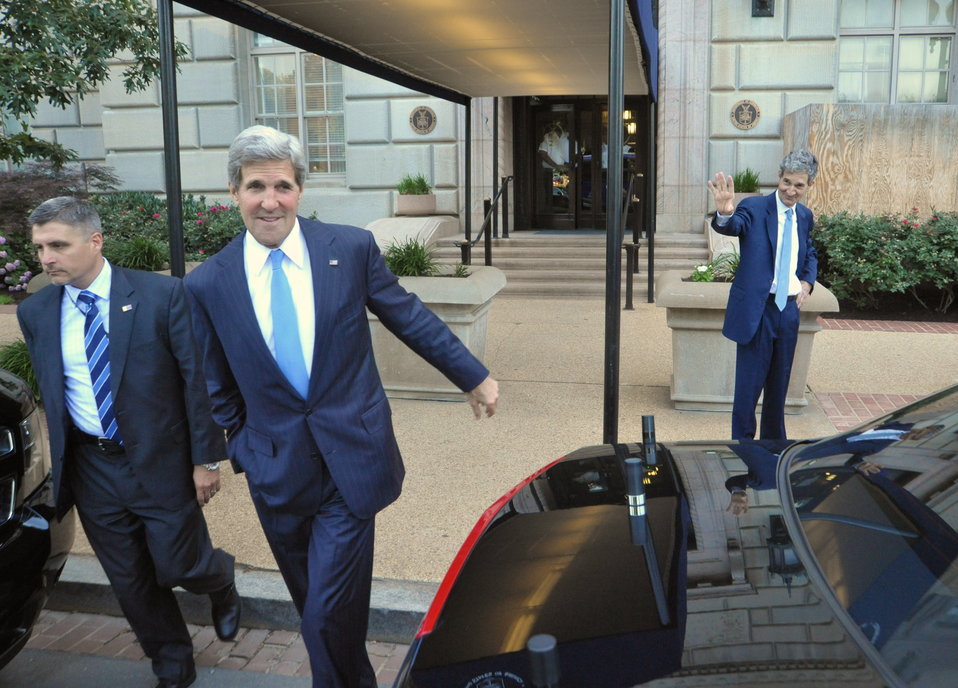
Acting Commerce Secretary Cameron Kerry Bids Farewell to His Brother, Secretary John Kerry

Acting U.S. Secretary of Commerce Cameron Kerry bids farewell to his brother, U.S. Secretary of State John Kerry, after he visited the Commerce Department on June 21, 2013. Cameron Kerry, the General Counsel of the Commerce Department, was holding the job until Secretary-Designate Penny Pritzker was confirmed by the U.S. Senate.